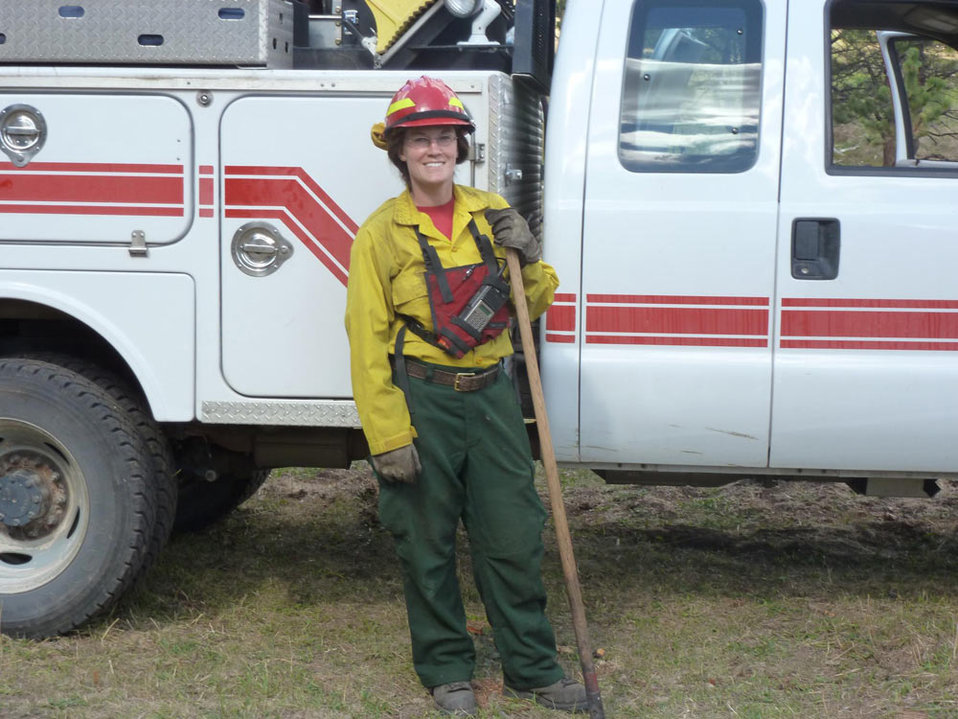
Lisa Meekins-Southeast Region

Lisa (Borel) Meekins served in the United States Air Force for seven years, and was honorably discharged as a Staff Sergeant in 2002. She worked as a Medical Technician at Mountain Home Air Force Base, Idaho, and Lackland Air Force Base, Texas. She performed as an Aeromedical Evacuation Technician at Ramstein Air Base, Germany. She also deployed to Prince Sultan Air Base, Saudi Arabia in support of Operation Northern Watch in 1997. Lisa is now a Forestry Technician/Wildland Firefighter at Alligator River National Wildlife Refuge in North Carolina. She had completed a Fire Internship there before being hired in 2009.